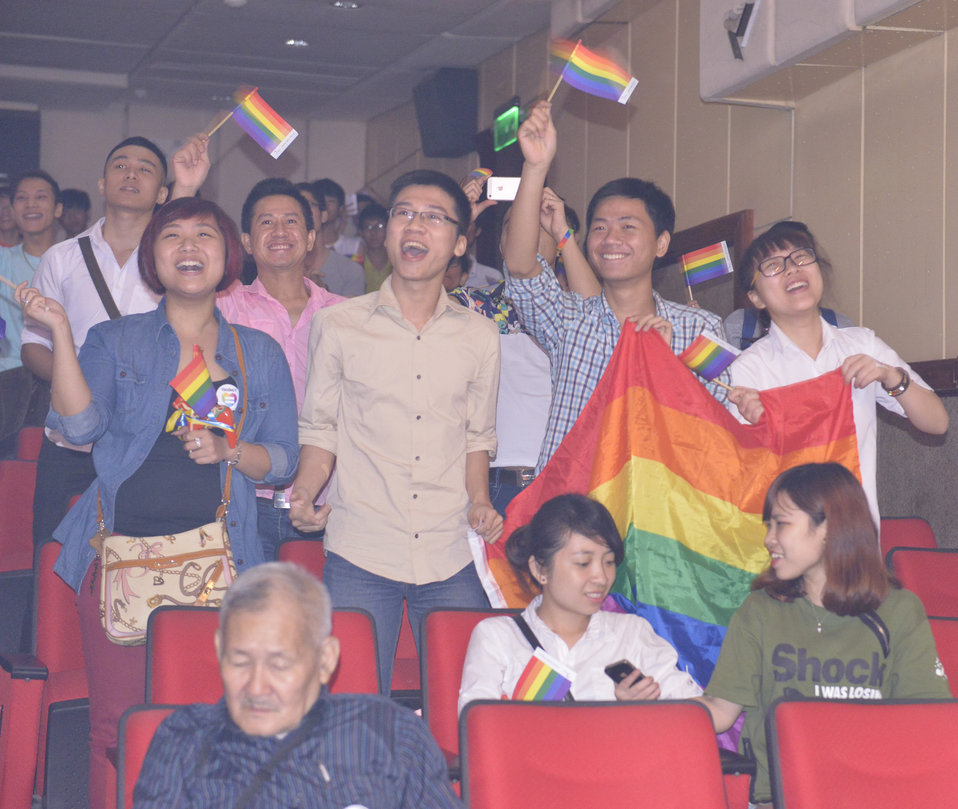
Celebration at the iSee LGBT Event

USAID Vietnam